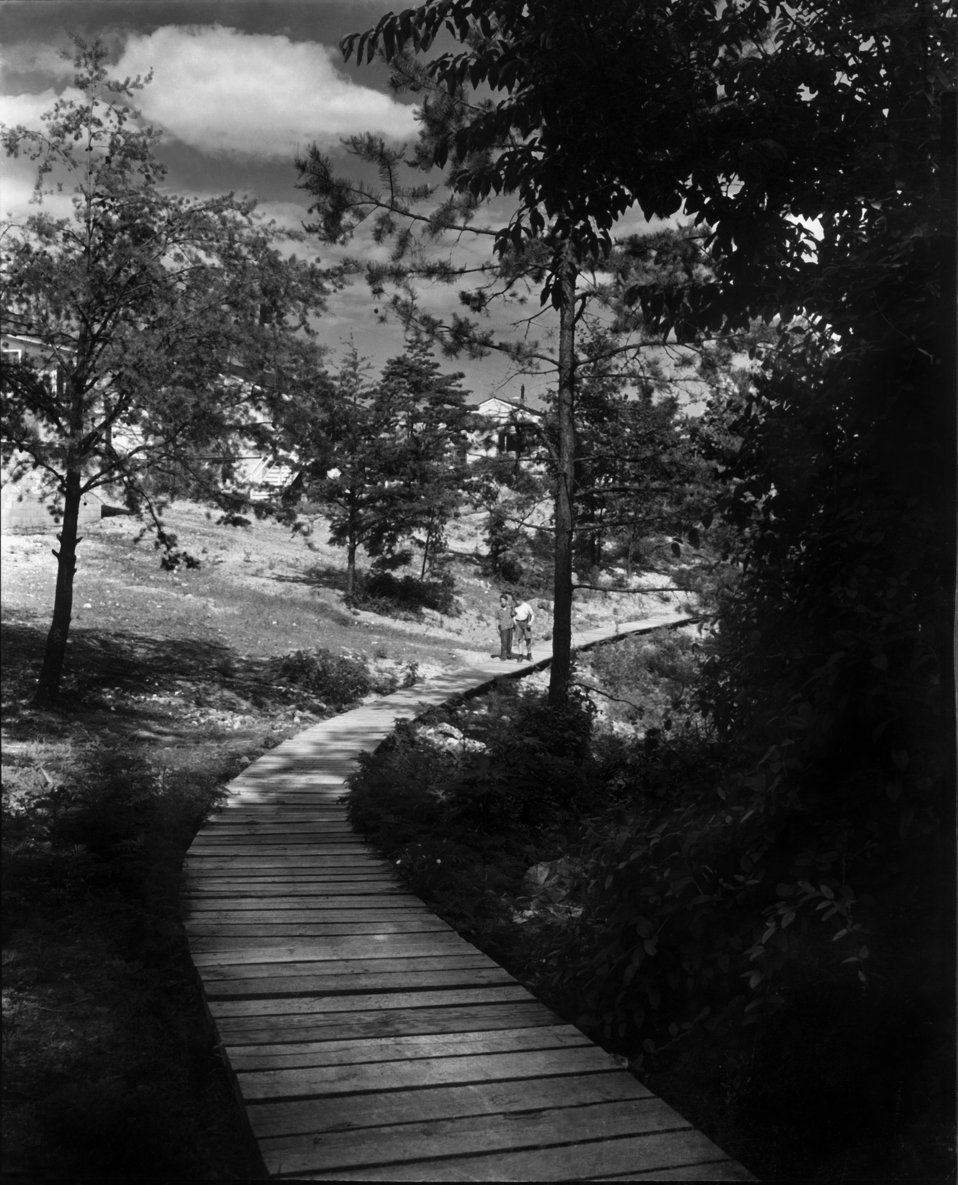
Oak Ridge Brand Walk Oak Ridge

MED 129 DOE photo by Ed Westcott 1944 Oak Ridge Tennessee